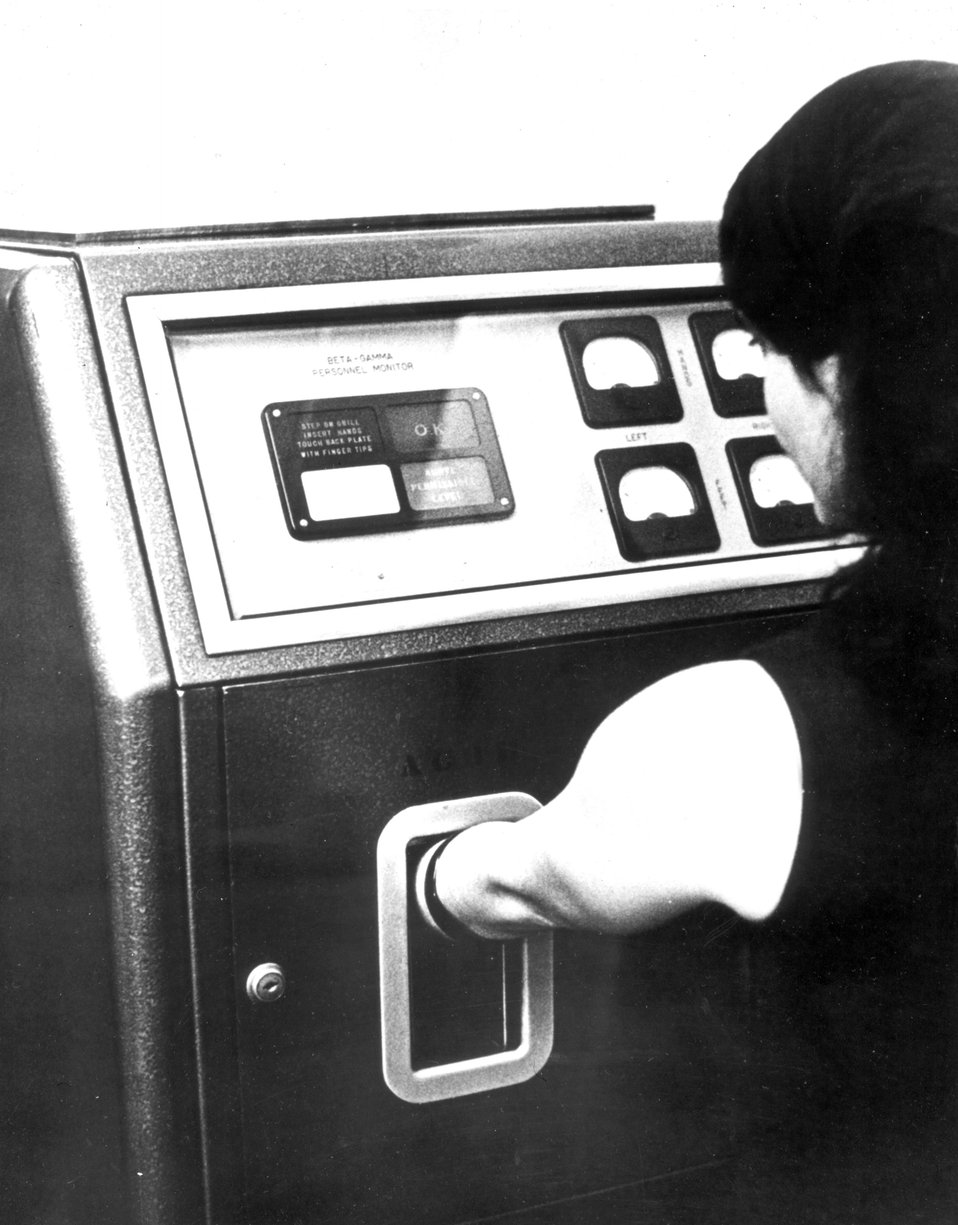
Installations where radioisotopes are in common use as research tools must constantly guard against the contamination of personnel, first, for their own safety, second, to make sure that other laboratories, corridors, and personnel are not affected.
c.1972